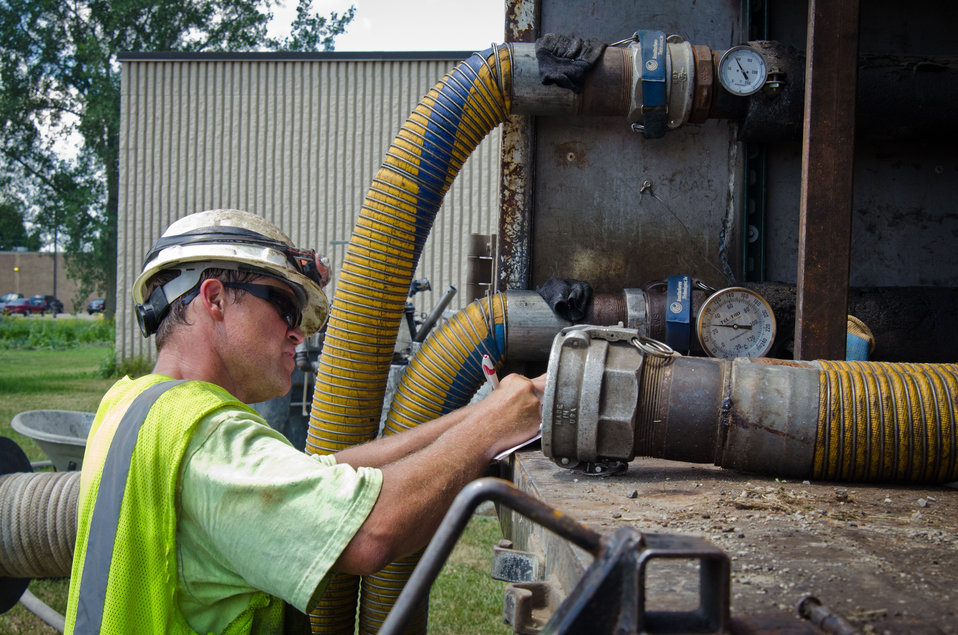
Insituform’s Chad Crippin records water pressure, temperature and other readings during a curing process for the Buena Vista Township Phase II Sewer Project, in Michigan, on Tuesday, July 19, 2011. This is the refurbishment and rehabilitation of 45,500 linear feet of defective sewer pipe and more than 200 manholes; the construction of an off-site excess flow basin; construction of a pump station; and improvements at the wastewater treatment plant. The system will serve 2,349 residential and 177 commercial customers and will bring the township into compliance with environmental regulations regarding pollutant discharges.
Inspections revealed that the 1960s sanitary sewer system had inflow from storm and rainwater systems and overflowed into the sanitary sewer system. Infiltration was found in the form of cracks, and other failures that allowed groundwater to enter. Rather than digging up the old system, rehabilitation with a cured-in-place-pipe (CIPP) method was chosen. This provides up to a 50% savings and the liner is projected to last 50-100 years. CIPP repair of the 8-30” diameter pipes involves pulling a resin-saturated fabric liner through a damaged pipe, which is then cured with steam or hot water to form a tight-fitting, joint less replacement pipe. Trenchless repair methods require less digging than traditional “dig and replace” repair methods and minimize damage to yards and landscaping. There are two of these teams and one manhole rehabilitation to seal the underground casting frame or brick structure. They process 600-800 feet per day.
Wade Trim Inc. Professional Engineer Tiffany Harrison said about working with the United States Department of Agriculture’s Rural Development “It was very easy, they make it very straight forward, in what paperwork they need. They were always available for questions.
USDA Rural Development has funded water and sewer projects in 117 Michigan communities serving more than 94,000 customers.
Senior Advisor to the Secretary of Agriculture Doug O’Brien said, “America will win the future by out-building, out-educating and out-innovating the world,” O'Brien said. “The Obama Administration is committed to the residents and business owners of Buena Vista Township in building the infrastructure needed to protect our environment and ensure clean water for future generations.” Being almost entirely surrounded by the Great Lakes, Michigan residents know that a small problem upstream usually leads to much bigger problems downstream and that the impact of water pollution extends far beyond the immediate community.